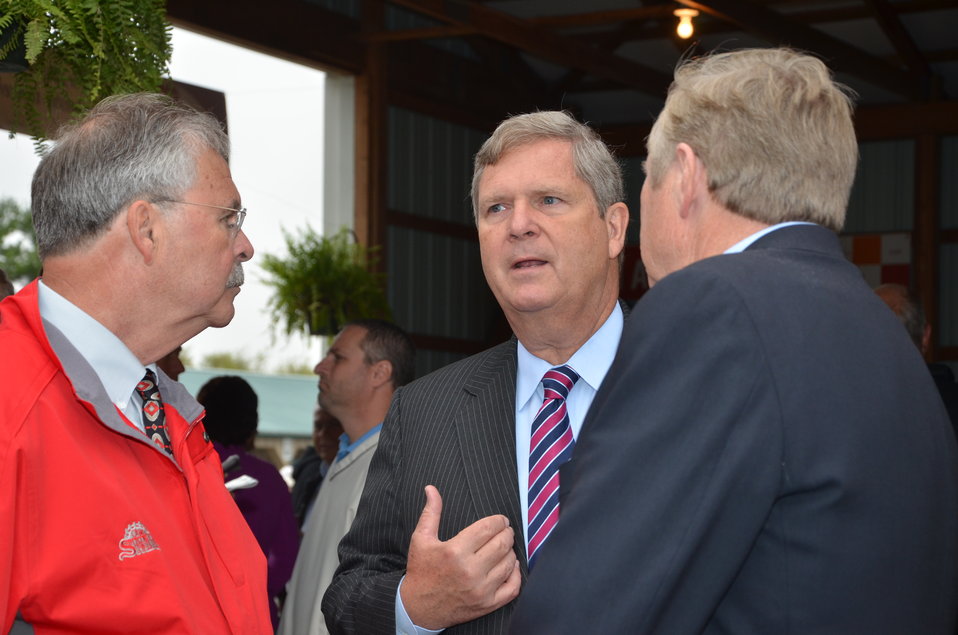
(Lto R) Executive Vice President of Ohio Farm Bureau Federation Jack Fisher, Agriculture Secretary Thomas Vilsack and Ohio Department of Natural Resources Director Jim Zehringer, visit at the Ohio Farm Bureau exhibit building before today's Vice President's Luncheon at the Farm Science Review, on Tuesday, September 18, 2012.